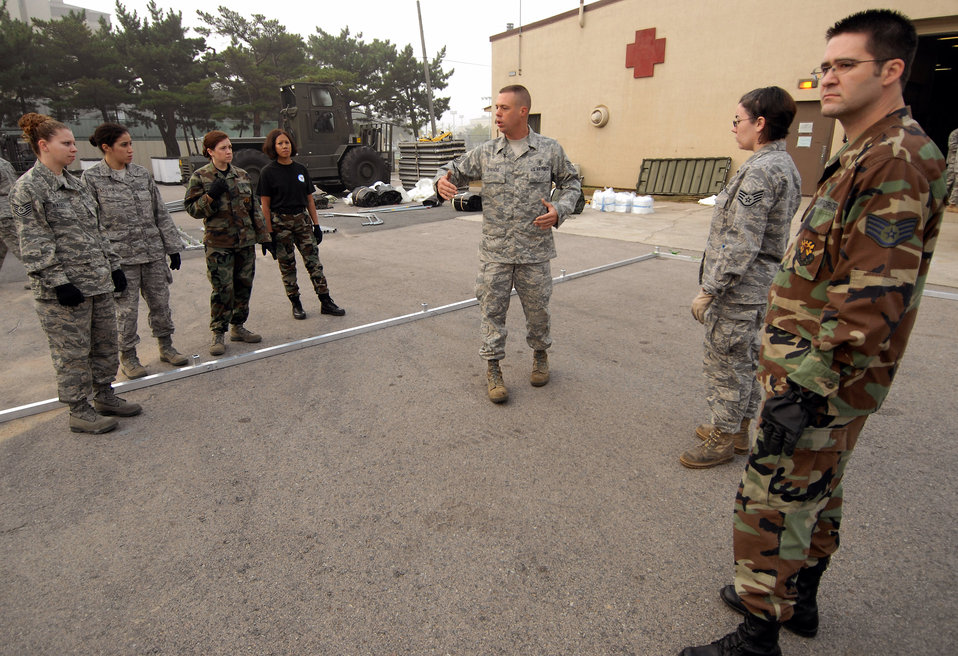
Reserve medics train at Kunsan

Tech. Sgt. Marc Paradis instructs Reserve Airman on constructing a medical staging facility Oct. 21 at Kunsan Air Base, South Korea. The reservists are from from Luke Air Force Base, Ariz., and Westover Air Reserve Base, Mass. Sergeant Paradis is assigned to the 36th Medical Support Squadron from Andersen Air Base, Guam.